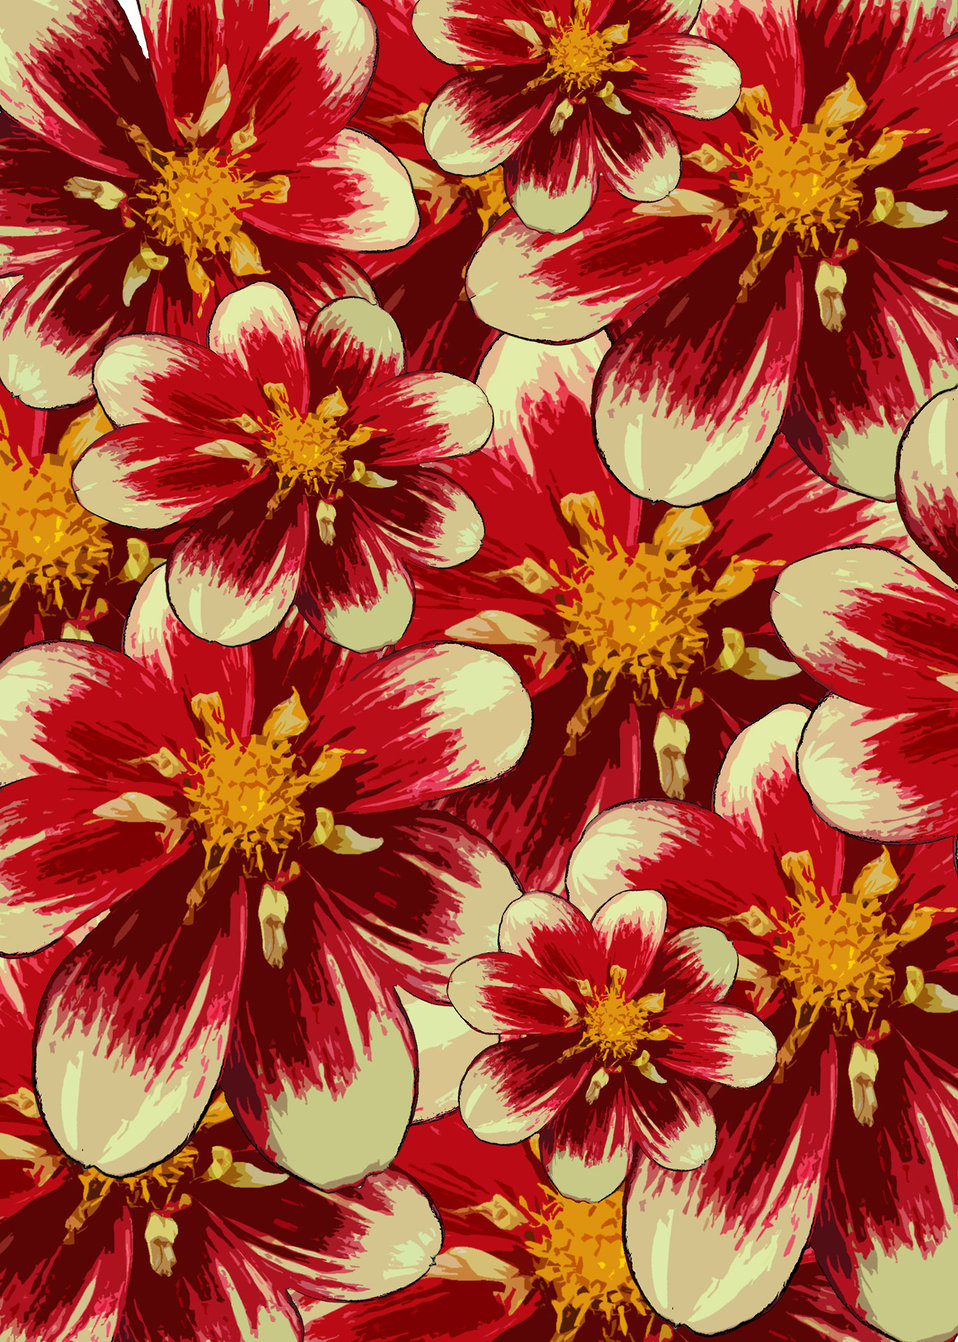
Red flower background.